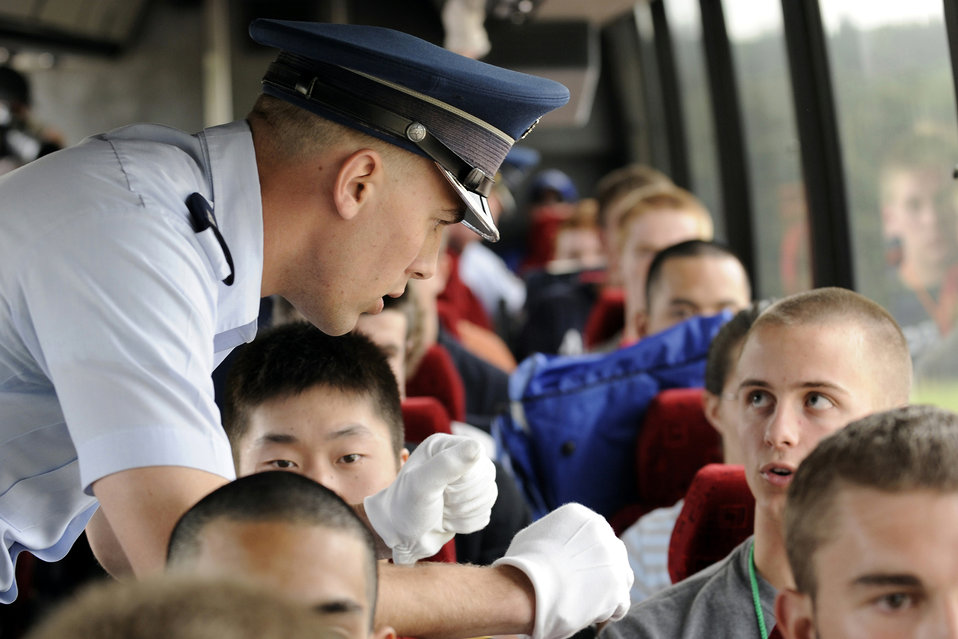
Academy Class of 2013 learns basics

Cadet 2nd Class Nathan Rings addresses a basic cadet during a bus ride from Doolittle Hall to the Cadet Area June 25 at the U.S. Air Force Academy in Colorado Springs, Colo. Basic cadets are directed to sit with their eyes facing forward at all times while on the bus.